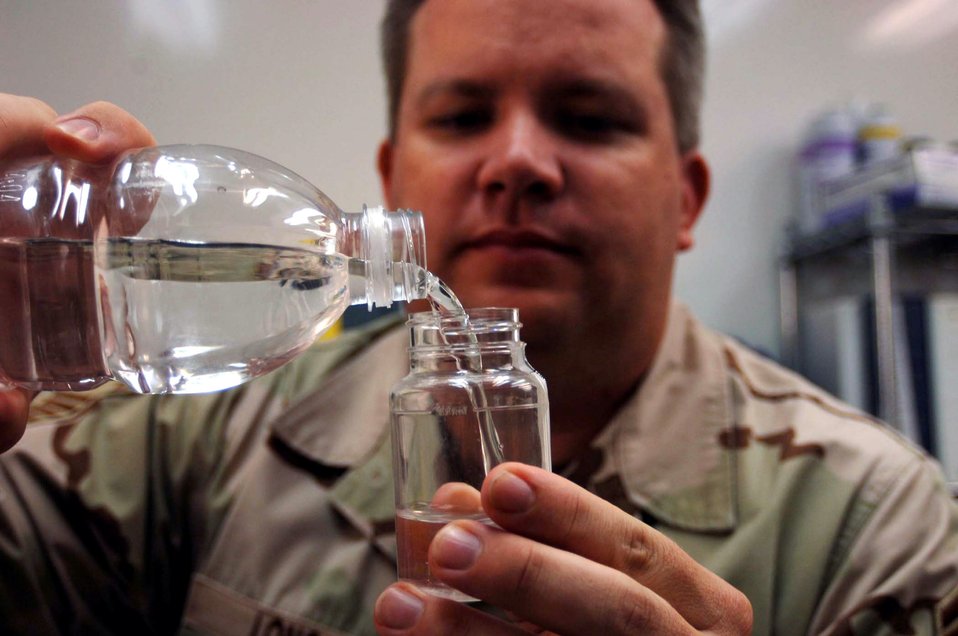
Drink up: Tigris River is life for troops in Baghdad

Senior Master Sgt. Ralph Long pours a sample of drinking water into a jar to test for bacteria and E. coli at Sather Air Base, Iraq. Residents at Sather AB use approximately 61,000 one-liter bottles of water every week. That's more than 116,000 gallons, just for potable water. Sergeant Long is assigned to the 447th Expeditionary Medical Squadron.